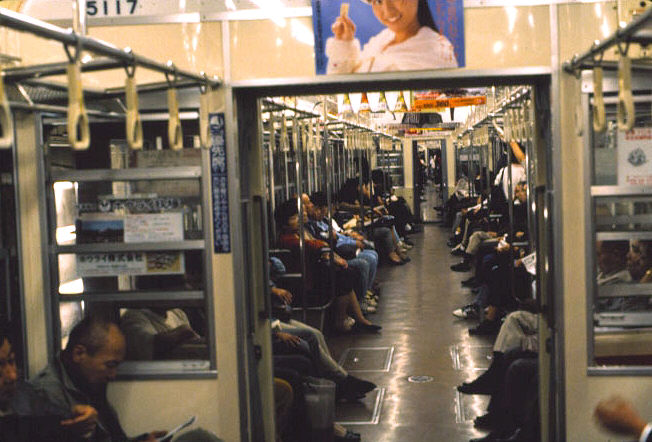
Tokyo subway--interior of train.